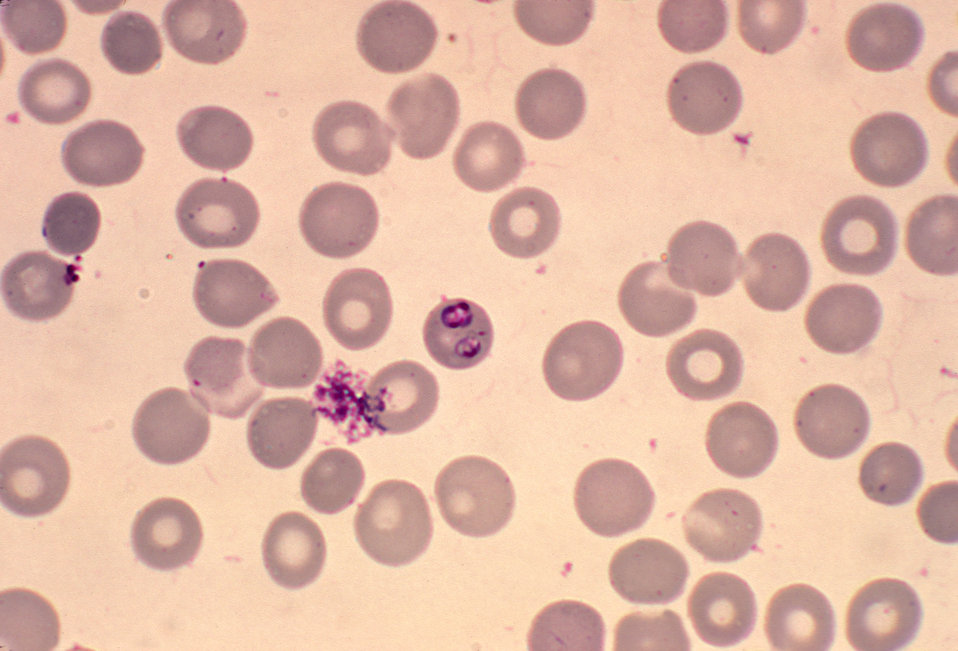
Babesia microti in blood smear. Giemsa stain. Parasite.